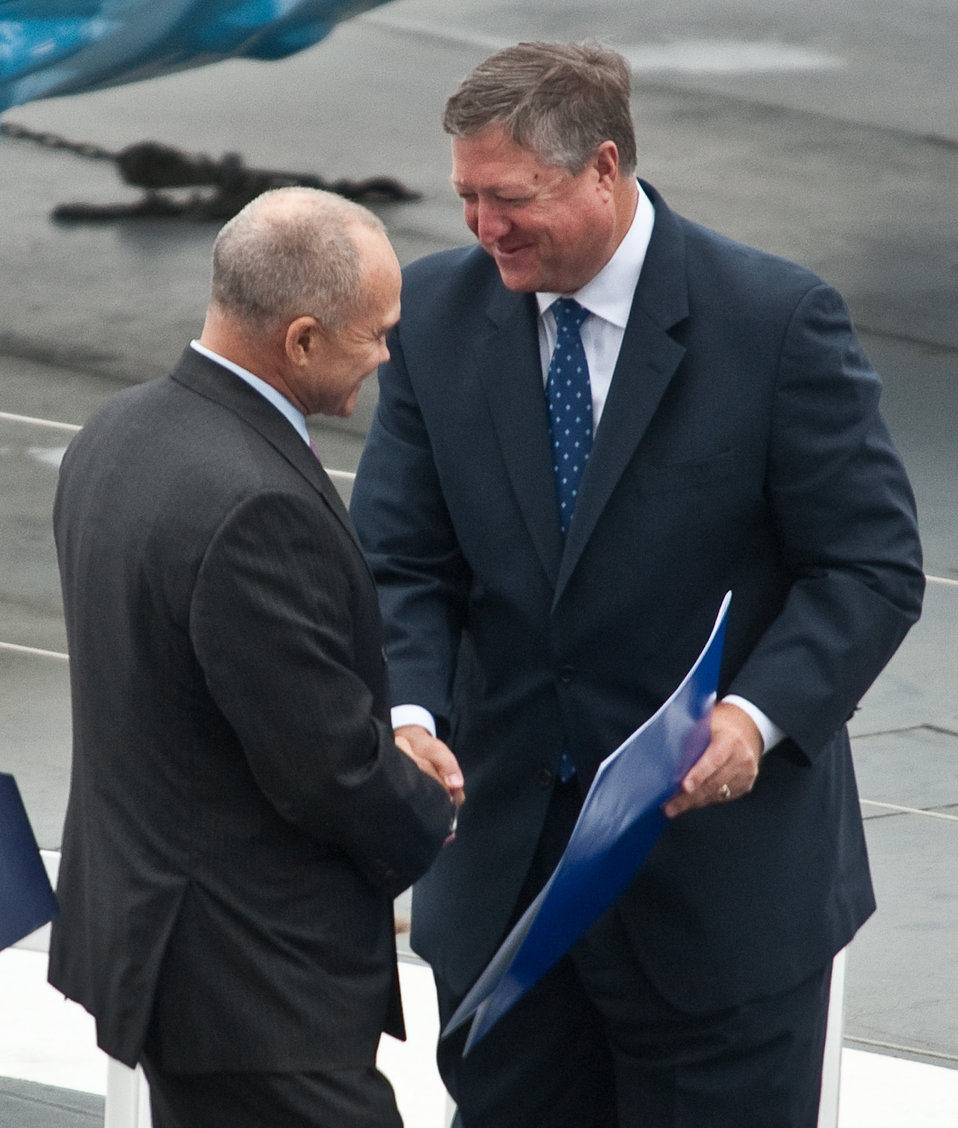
Air Force Week New York City Proclamation Ceremony

The Police Commissioner of the City of New York, the Honorable Raymond Kelly (left) represented New York City, presents the proclamation document to the Honorable Michael Donley, Secretary of the Air Force, during the Air Force Week New York City proclamation ceremony on the USS Intrepid on Aug. 24, 2010, New York City, NY. The event was highlighted by a six-ship flyover by the USAF Thunderbirds. Also attending was General Raymond Johns, Commander of Air Mobility Command, and Mr. Greg Kelly of